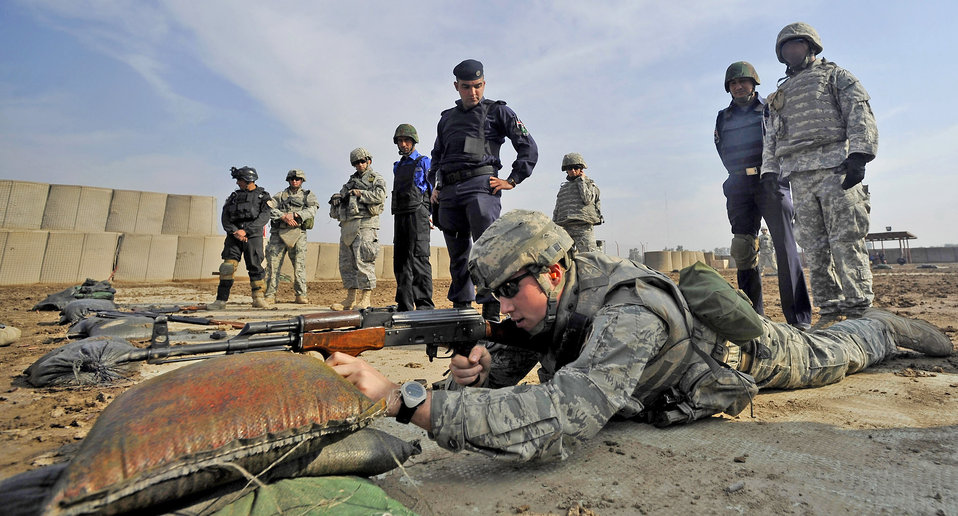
Airmen lead training course for Iraqi police

Staff Sgt Michael Gomez lies down in the prone supported position to demonstrate different shooting techniques to Iraqi police Nov. 18, 2009, in Baghdad, Iraq. Sergeant Gomez is assigned to the 732nd Expeditionary Security Forces Squadron Det. 2.